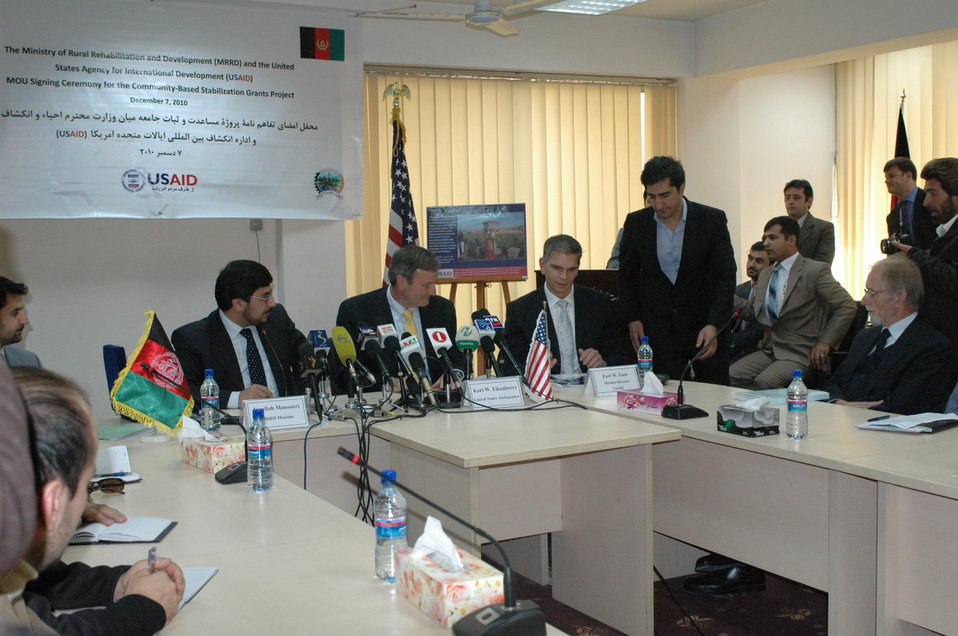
Community Based Stabilization Grants Ceremony, December 7, 2010